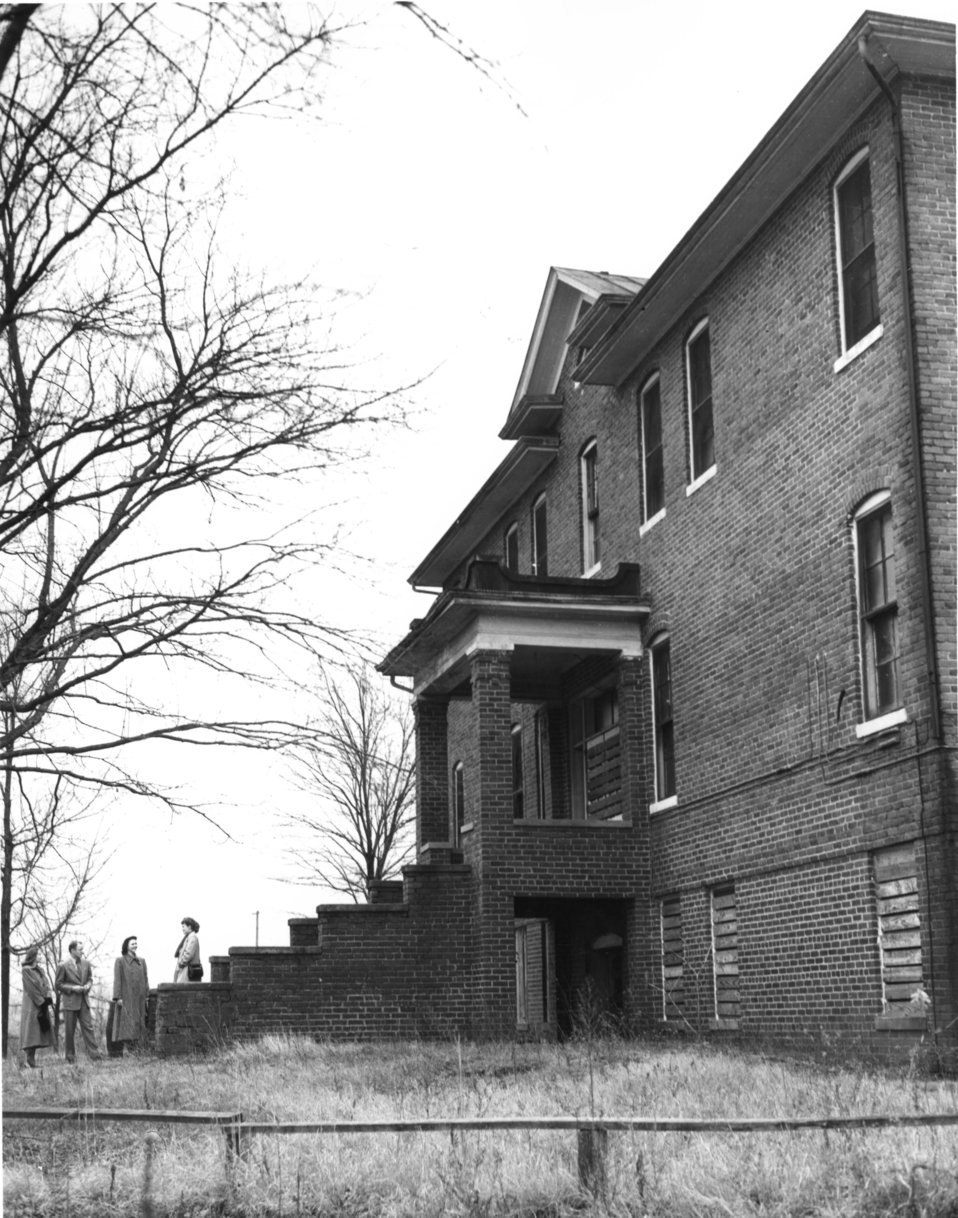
Early settlers at Oak Ridge